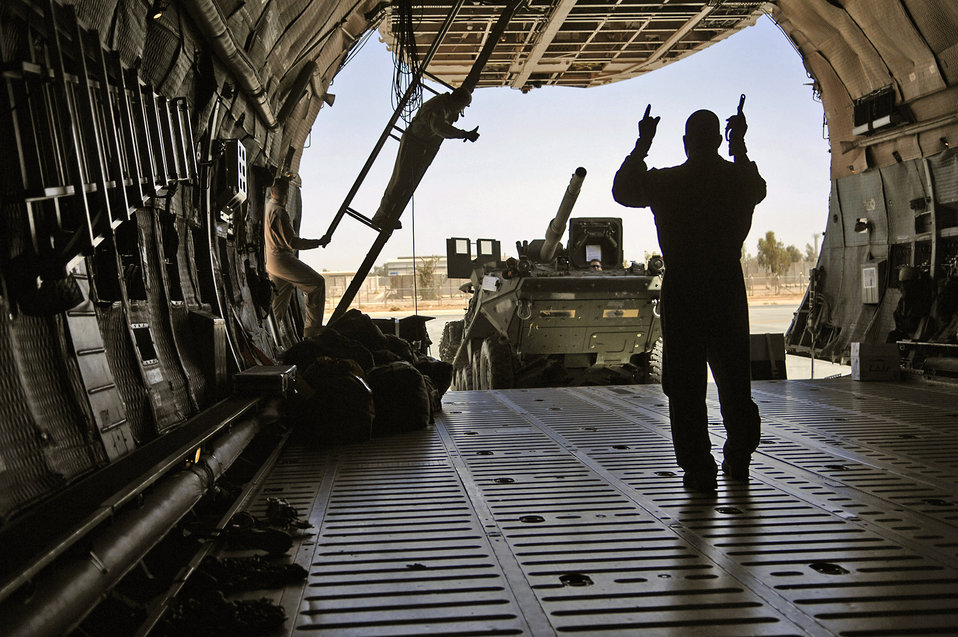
Open wide

C-5 Galaxy crewmembers along with aerial port Airmen assigned to the 332nd Expeditionary Logistics Readiness Squadron load an Army Stryker Infantry Carrier Vehicle onto a C-5 Galaxy June 25 at Joint Base Balad, Iraq. With a maximum cargo weight of 270,000 pounds the C-5 can carry more than any other Air Force airlifter. The C-5 is from Dover Air Force Base, Del.